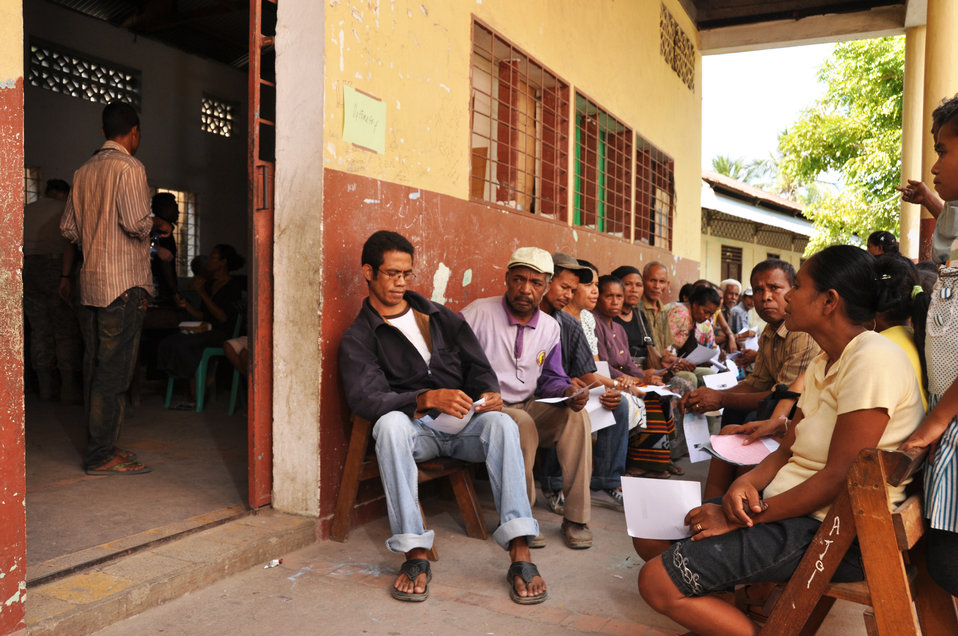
Airmen help hundreds in Timor Leste

Local residents wait outside a makeshift optometry office for free exams at a clinic set up July 16 in Dili, Timor Leste. East Timorese and U.S. officials set up the clinic as part of Operation Pacific Angel 2009, a Pacific Air Forces humanitarian assistance operation led by 13th Air Force at Hickam Air Force Base, Hawaii.